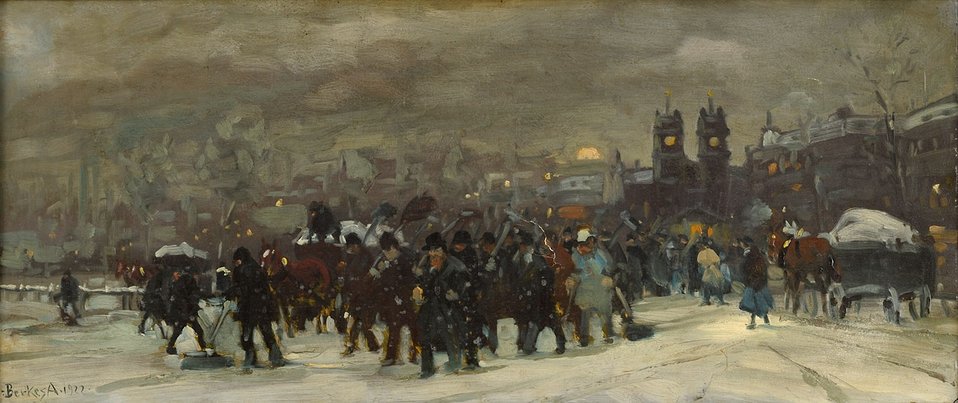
Wintertag (laut Auktionshaus 'in Paris'). Signiert. Datiert 1922. Öl/Lwd., 36 x 82 cm